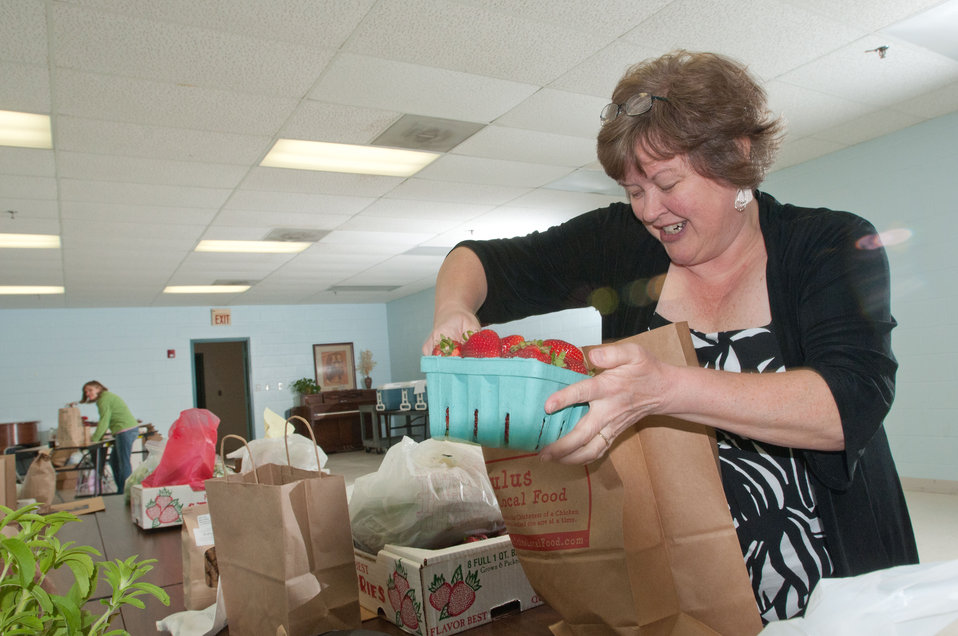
Elaine Kastendieck picks up her customized order of Fall Line Farms groceries at the Bon Air United Methodist Church pick-up point, in Richmond, VA, on Thursday, May 5, 2011. Traditional food cooperatives provide identical orders. This is one of several pick-up points in the Richmond area. This local food hub offers a wide variety of household food staples and specialty items. Members can pick their customized orders from an ever changing inventory of fruits, vegetables, meats, soaps, eggs, cheeses, flowers, honey, pastas, sauces, syrups, baked goods, mushrooms, flour and grains. Suppliers post what they have on a Lulus Local Food online listing and customers (who pay seasonal dues) can make their selection. Then every Thursday suppliers team up with other suppliers to deliver orders to, one of several pick-up points, designated by the customer in or around the Richmond area.